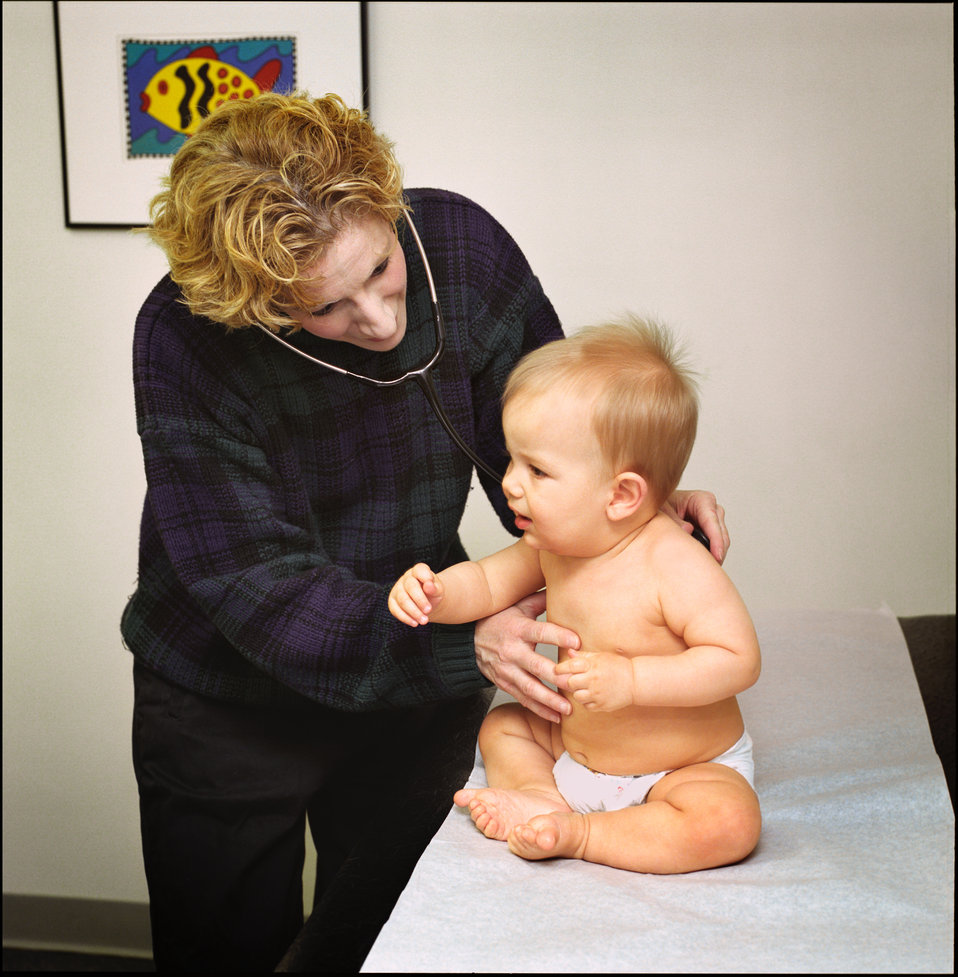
This photograph depicts a physician examining a 9 month old infant.